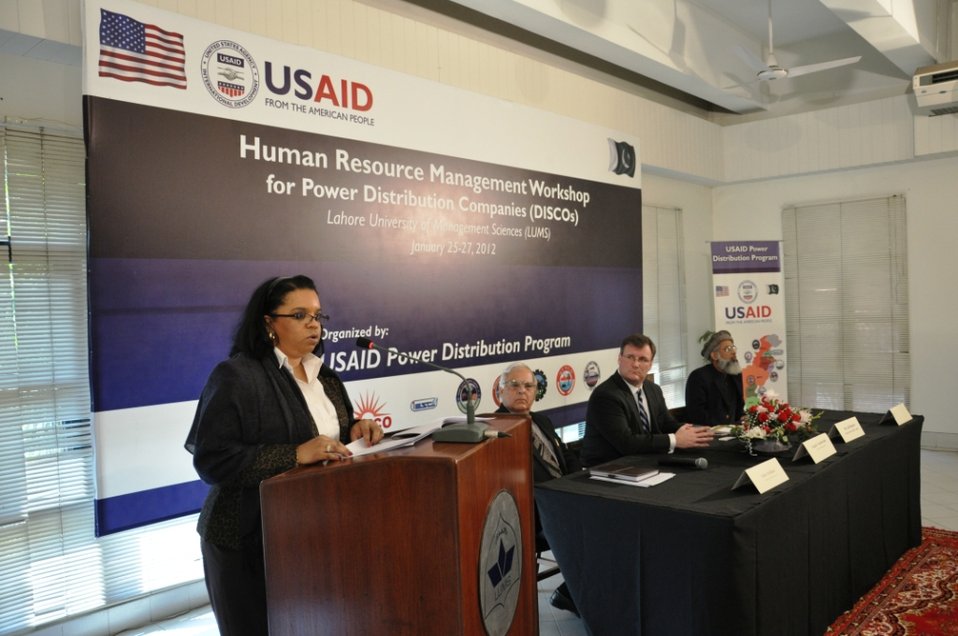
HR Workshop at LUMS

Lahore, January 15, 2012 - Ms. Gail Spence, Deputy Director USAID/Punjab, launched the HR Workshop.